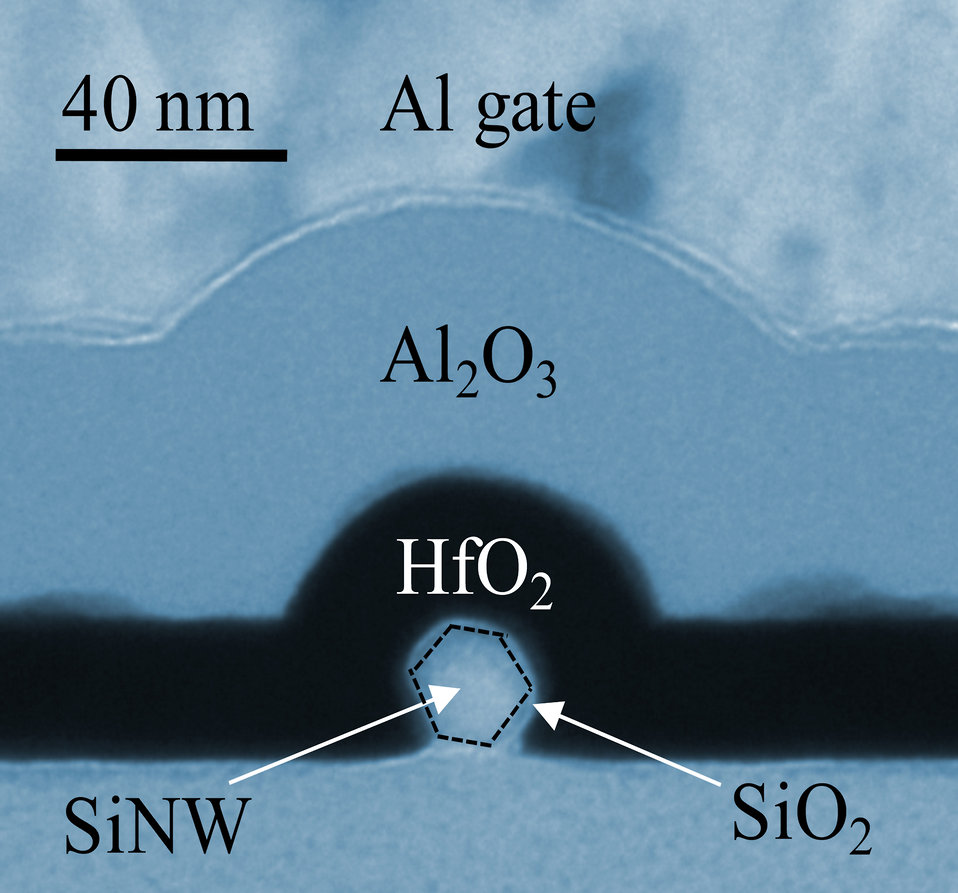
TEM of silicon nanowire

In this transmission electron micrograph, a silicon nanowire is shown surrounded by a stack of thin layers of material called dielectrics, which store electrical charge. NIST scientists determined the best arrangement for this dielectric stack for the optimal construction of silicon nanowire-based memory devices. Color added to image.